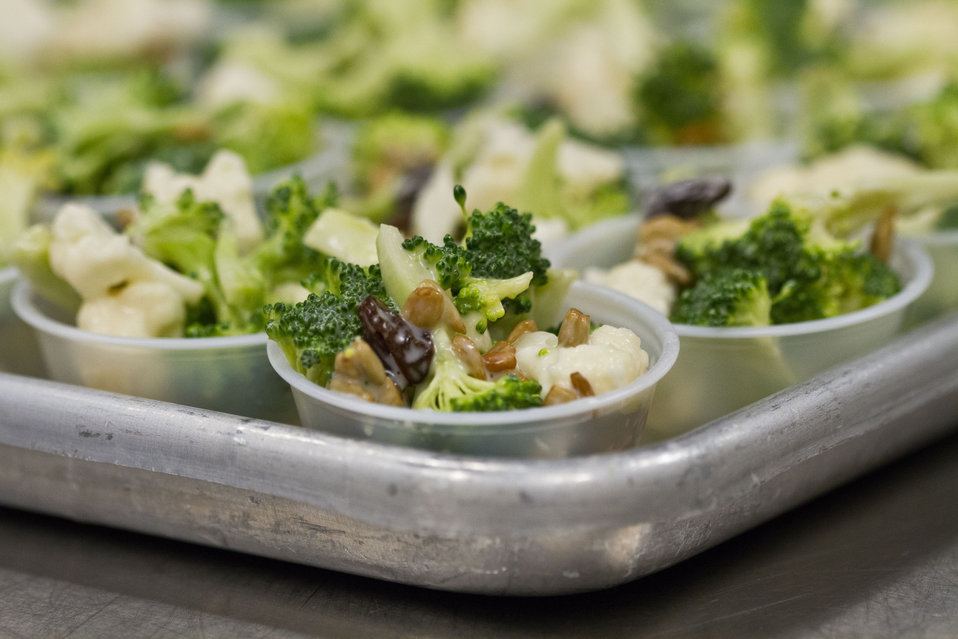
The sunny broccoli and cauliflower toss that more than 50 students from the 5th grade classes at Yorkshire Elementary School in Manassas, VA., sampled during a taste testing of the new school lunch menu created to meet the new standards. Students tested a sample menu of black-bean filled pizza, pineapple spear, plantain, sunny broccoli and cauliflower toss, and an apple and celery cup with sunbutter dip (a peanut butter substitution), on Wednesday, September 5, 2012.